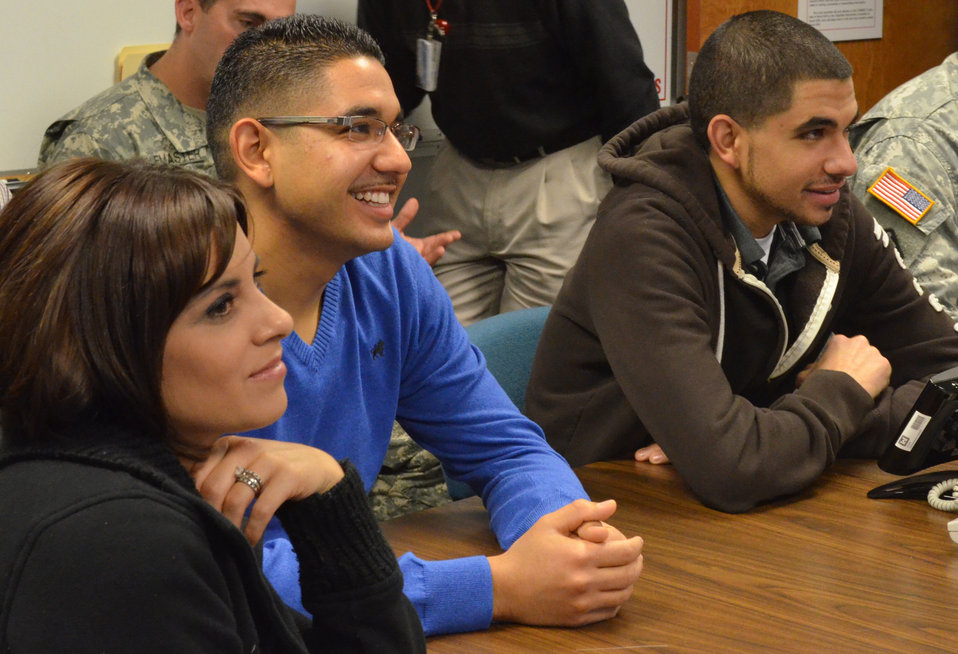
Holiday wishes from dad in Afghanistan

Members of the Mizani family chat with their father, Mehdi, via video conference Dec. 20, 2012, while the patriarch is working with the U.S. Army Corps of Engineers mission in Afghanistan. By the time he returns, Mehdi Mizani will have helped direct Corps construction programs for two full years in Afghanistan. The video linkup was sponsored by the Sacramento District’s family support network.